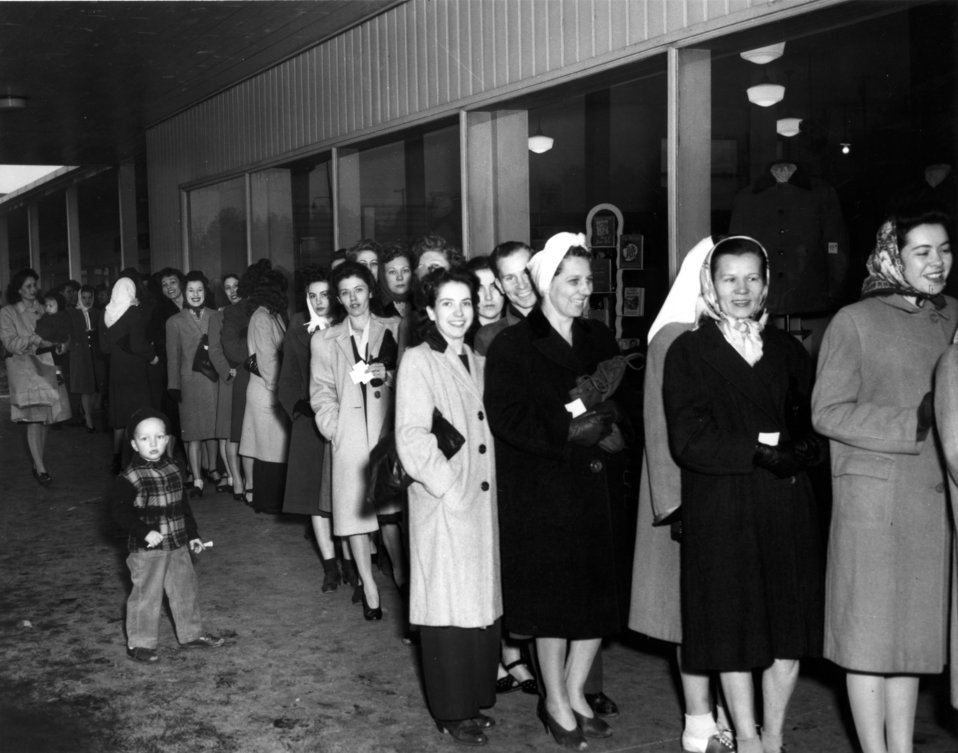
Daily Life at Oak Ridge